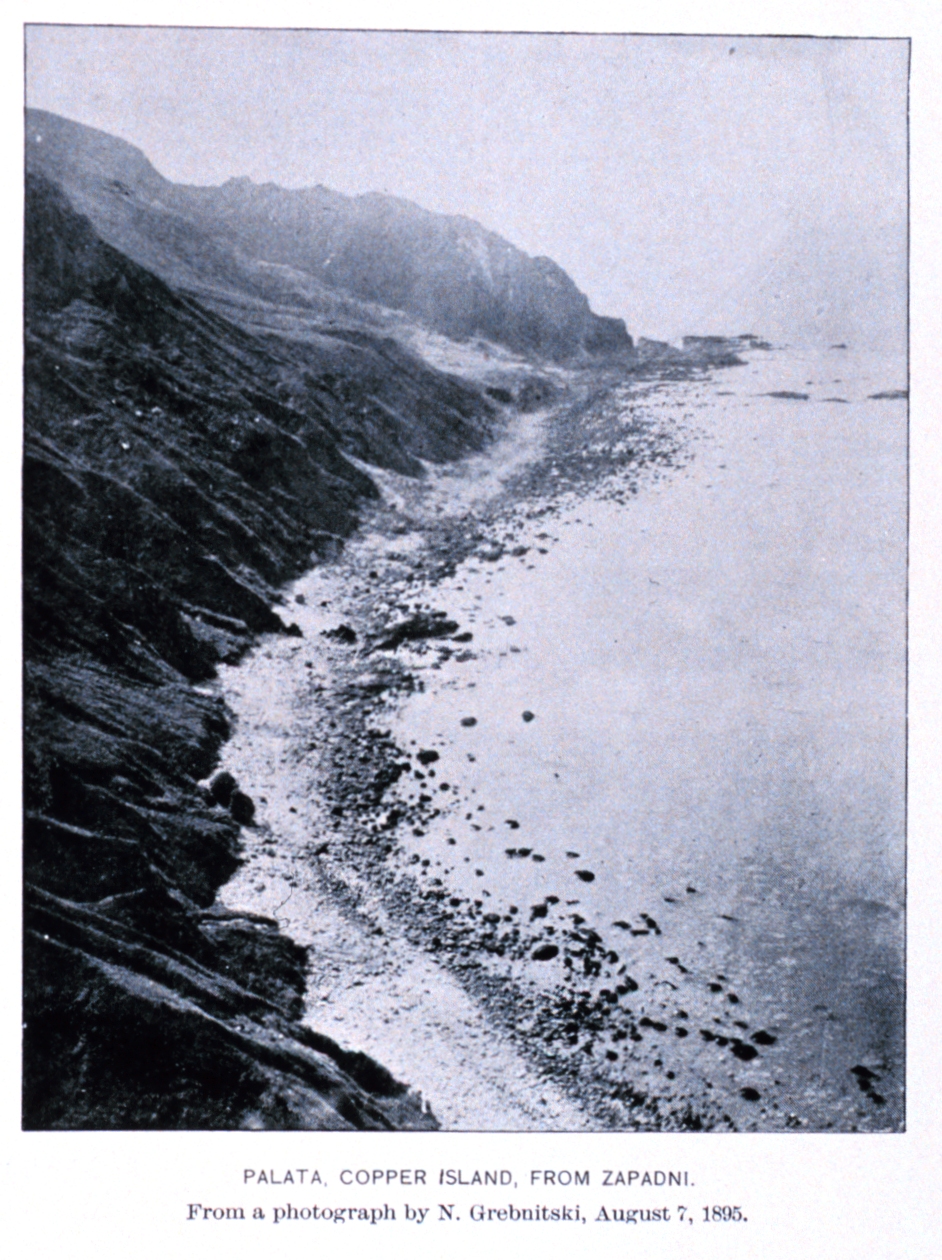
Palata fur seal rookery